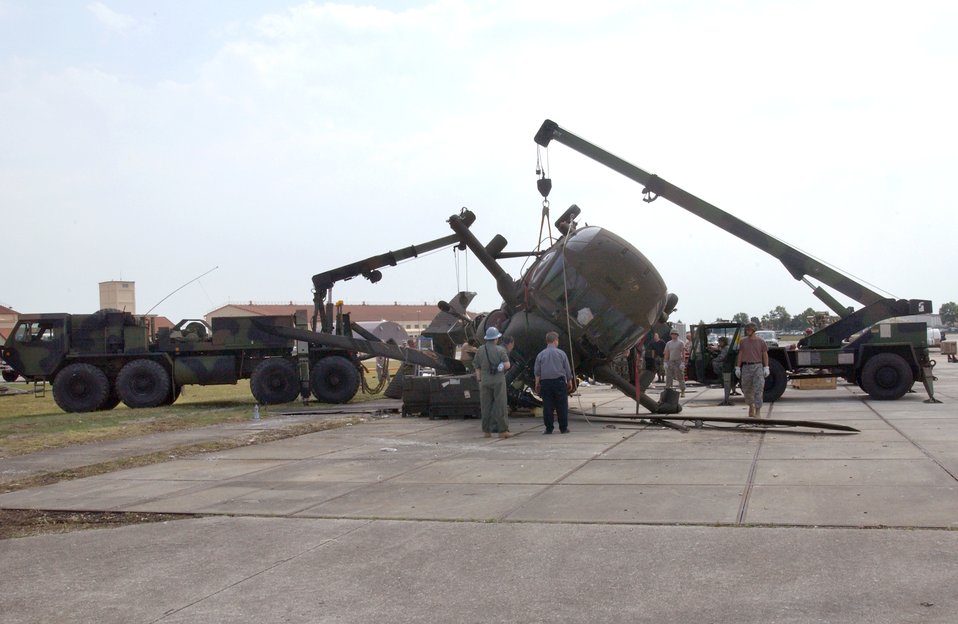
This side up

Servicemembers prepare to stabilize an aircraft at Aviano Air Base, Italy, on July 6. The aircraft suffered damage after a severe thunderstorm with wind gusts that measured up to 82 knots. The storm tore through Aviano on June 29, and caused basewide damage estimated at $3.5 million.